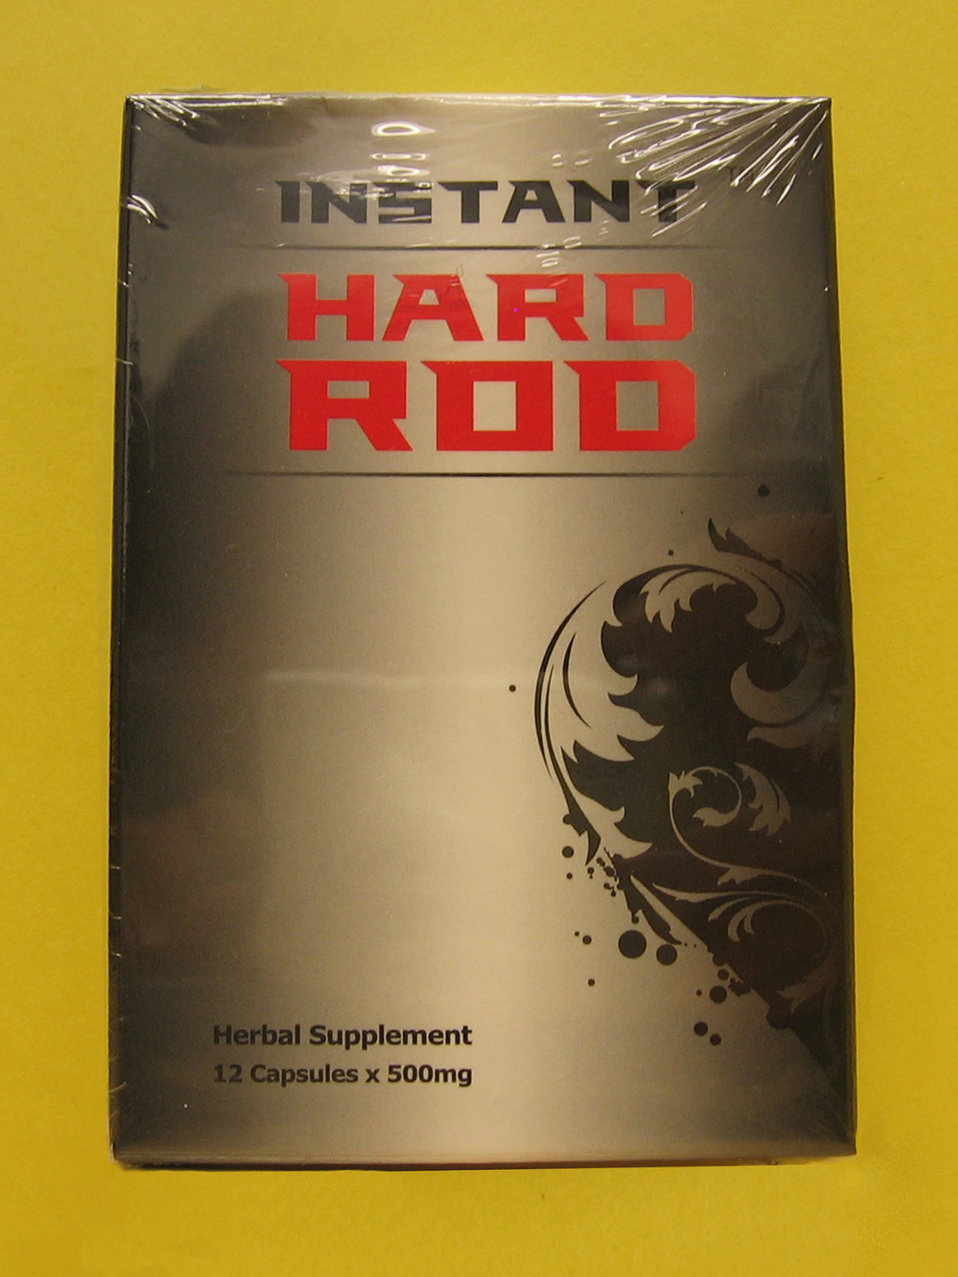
Instant Hard Rod

April 20, 2012 - The FDA is advising consumers not to purchase or use 'Instant Hard Rod,' a product promoted and sold for sexual enhancement. The product was found to contain undeclared aminotadalafil. For more information, go www.fda.gov/Drugs/ResourcesForYou/Consumers/BuyingUsingMe...

And read this Consumer Update: Beware of Fraudulent ‘Dietary Supplements’